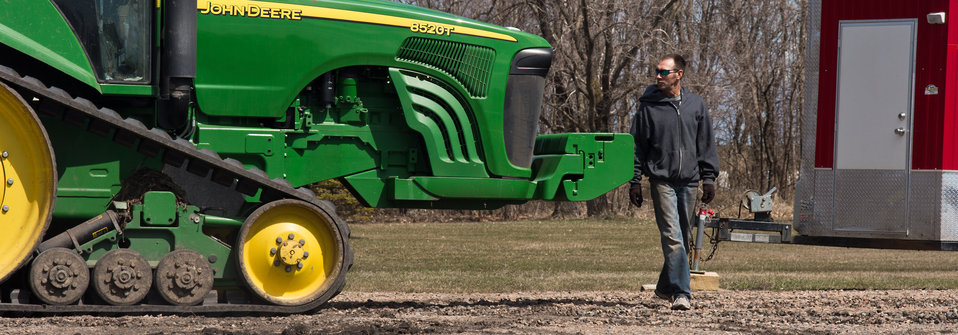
Jeff Hoff checks the farm equipment at his farmstead in Perley, MN, on Tuesday, April 30, 2013. With the assistance of the U.S. Department of Agriculture (USDA), he was able to build up and modify an earthen dike that is currently holding back flood waters around his home, structures and farm equipment. To learn about the USDA Red River Basin Initiative, see www.mn.nrcs.usda.gov/news/features13/RRBI.html.